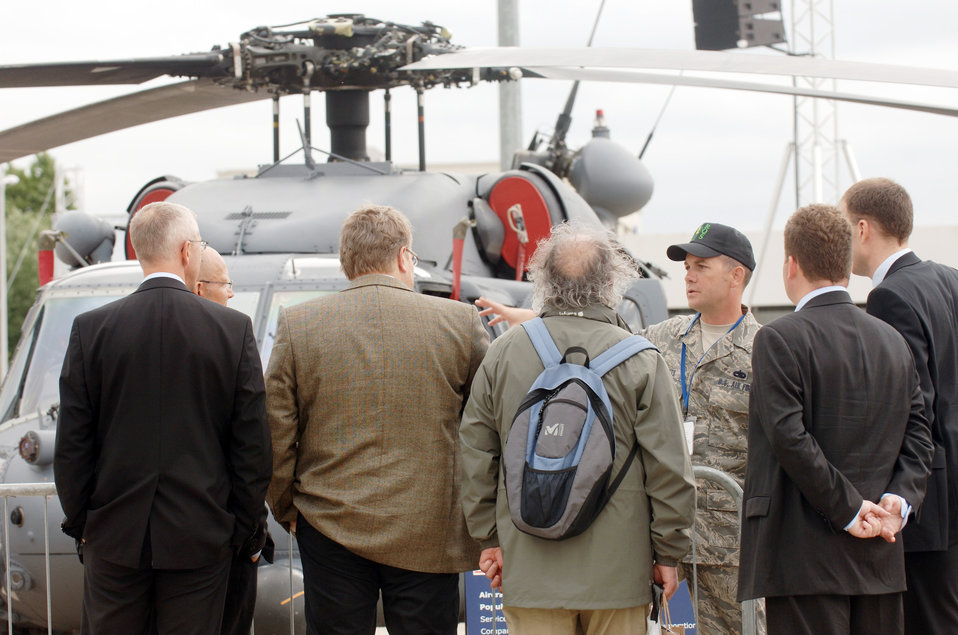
Airmen, aircraft on display at Paris Air Show

Tech. Sgt. Benjamin Pitts discusses the capabilities of the HH-60 Pave Hawk combat search and rescue helicopter during the Paris Air Show 2009 June 18 at Le Bourget, France. The aircraft and crew are assigned to the 41st Rescue Squadron from Moody Air Force Base, Ga. Sergeant Pitts is a Pave Hawk maintainer.